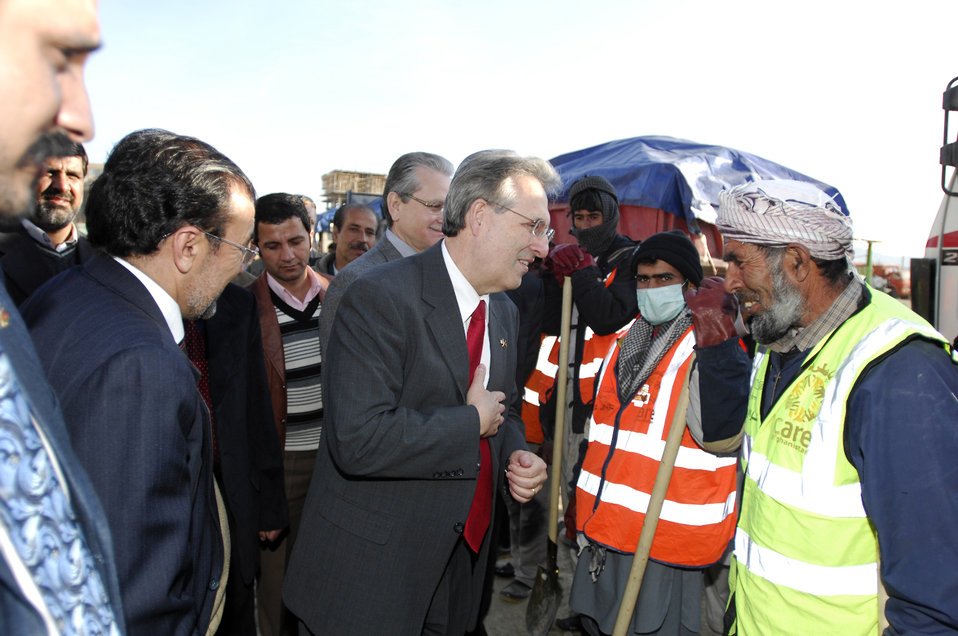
Care38